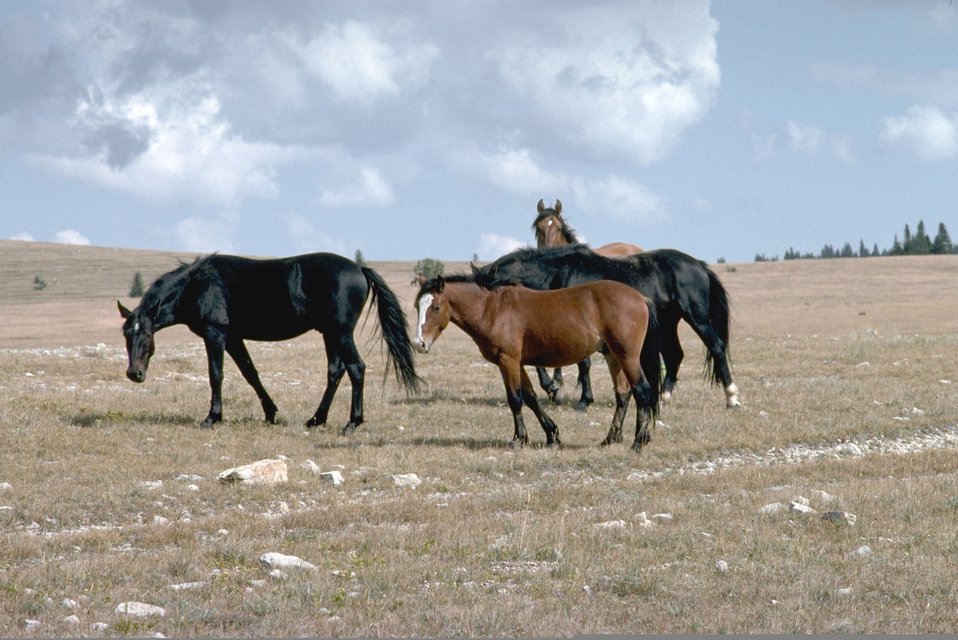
Wild Horses